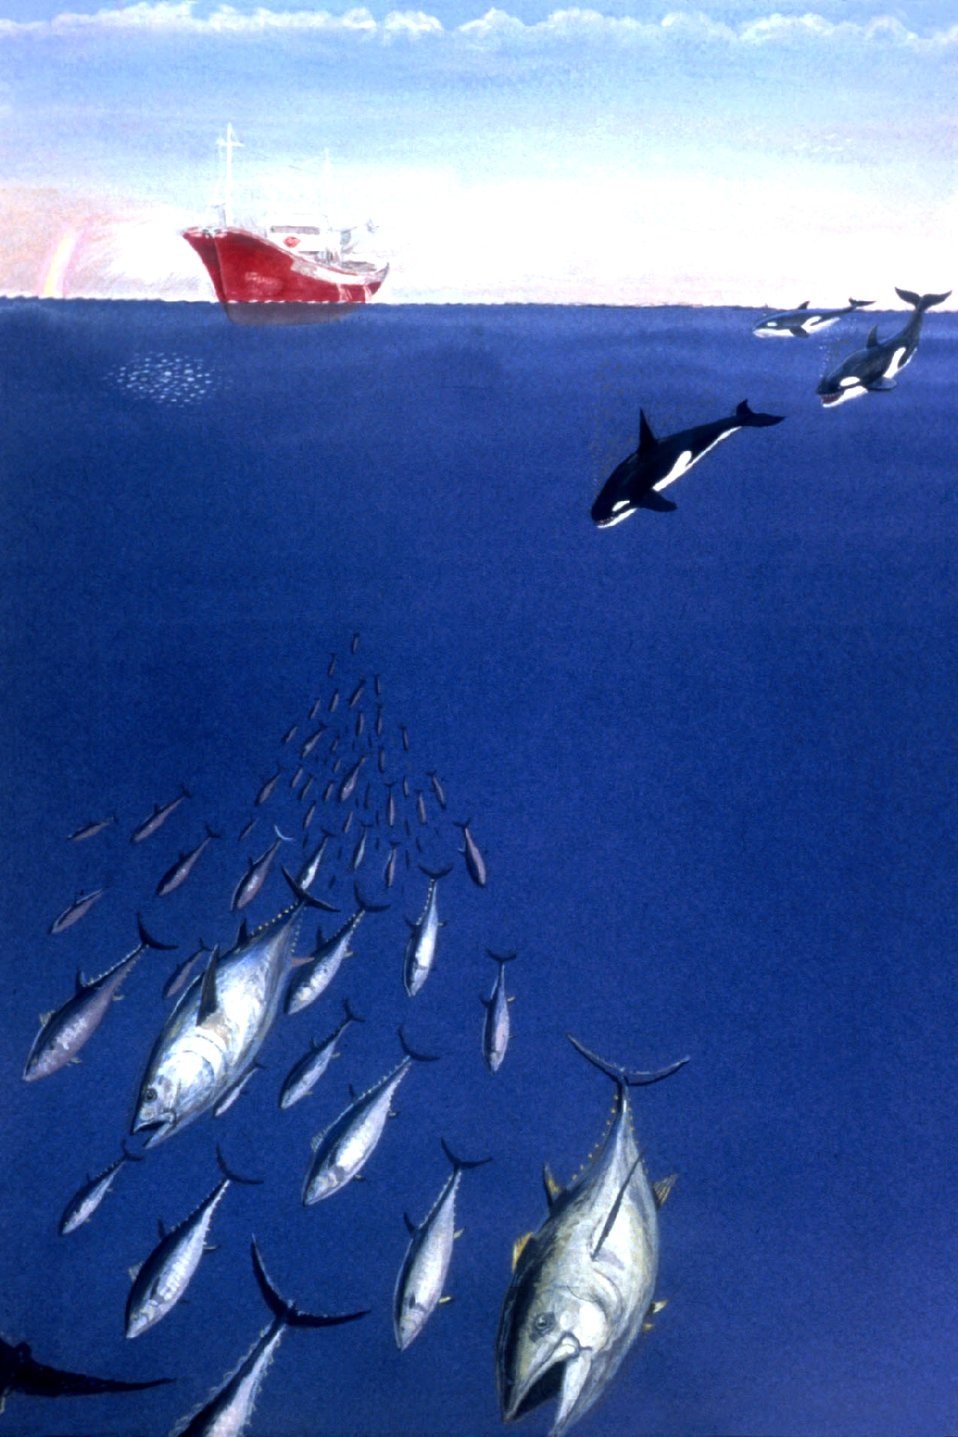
Besides man, killer whales are major predators pursuing tuna.